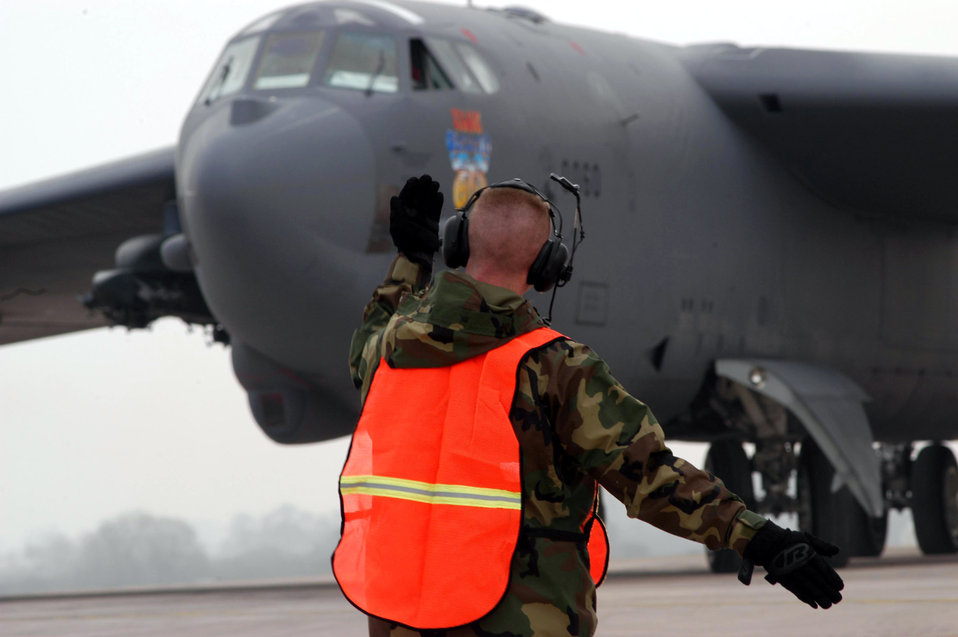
Iron Butterfly

OPERATION IRAQI FREEDOM -- Crew chief Senior Airman Benjamin Davis marshals out a B-52 Stratofortress nicknamed